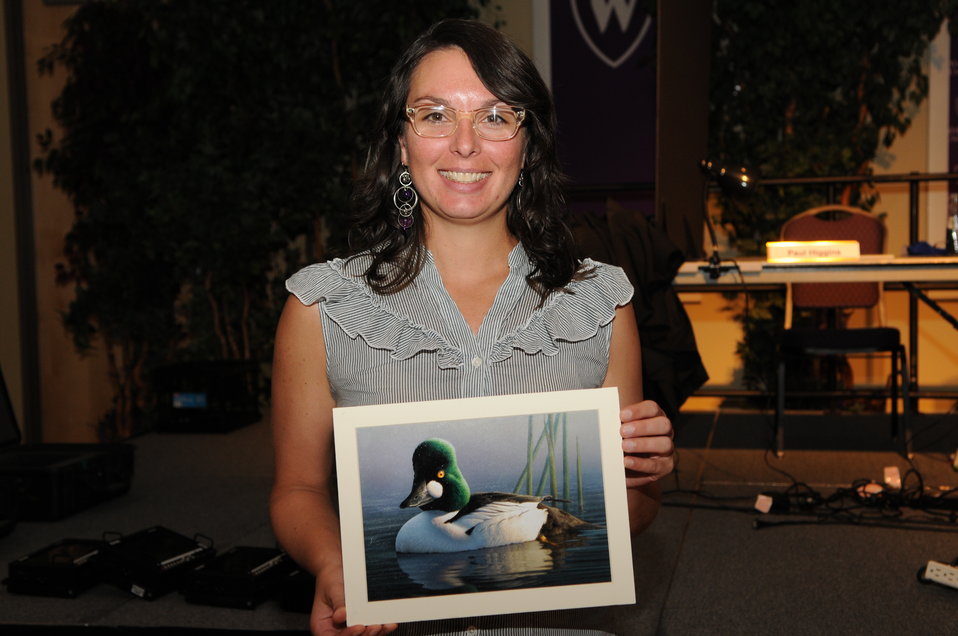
Everyone Loves a Winner

The U.S. Fish & Wildlife Service sponsored the 2012 Federal Duck Stamp Art Contest September 28 and 29 in Ogden, Utah, at Weber State University. A panel of five judges was responsible for choosing the art work used to design the 2013-2014 Migratory Bird Hunting and Conservation Stamp.